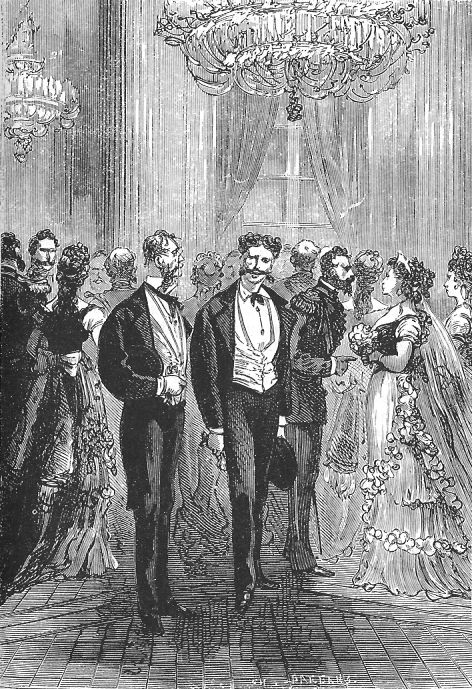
An illustration from the novel 'Michael Strogoff: The Courier of the Czar' by Jules Verne drawn by Jules Férat. Polski: Ilustracja powieści Juliusza Verne'a 'Michał Strogow, kurier carski' autorstwa Julesa Férata. Français : 'Michel Strogoff. Le courier du tzar', Jules Férat. Français : « Vraiment, monsieur, cette fête est charmante !... »